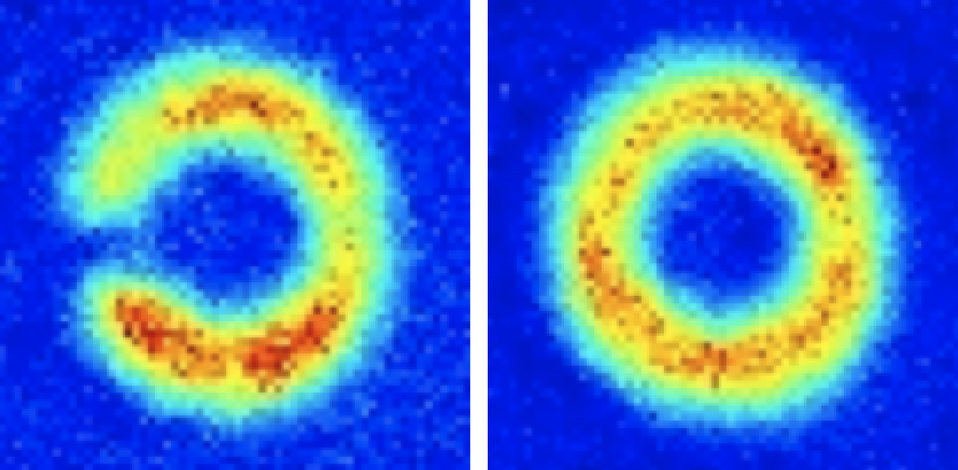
Atom circuit (figures: 'ring with barrier'is the left-hand figure; 'ring' is the right-hand figure) False color images of an 'atom circuit' made of an ultracold sodium gas. Red denotes a greater density of atoms and traces the path of circulating atoms around the ring. A laser-based barrier can stop the flow of atoms around the circuit (left); without the barrier the atoms circulate around the ring (right).